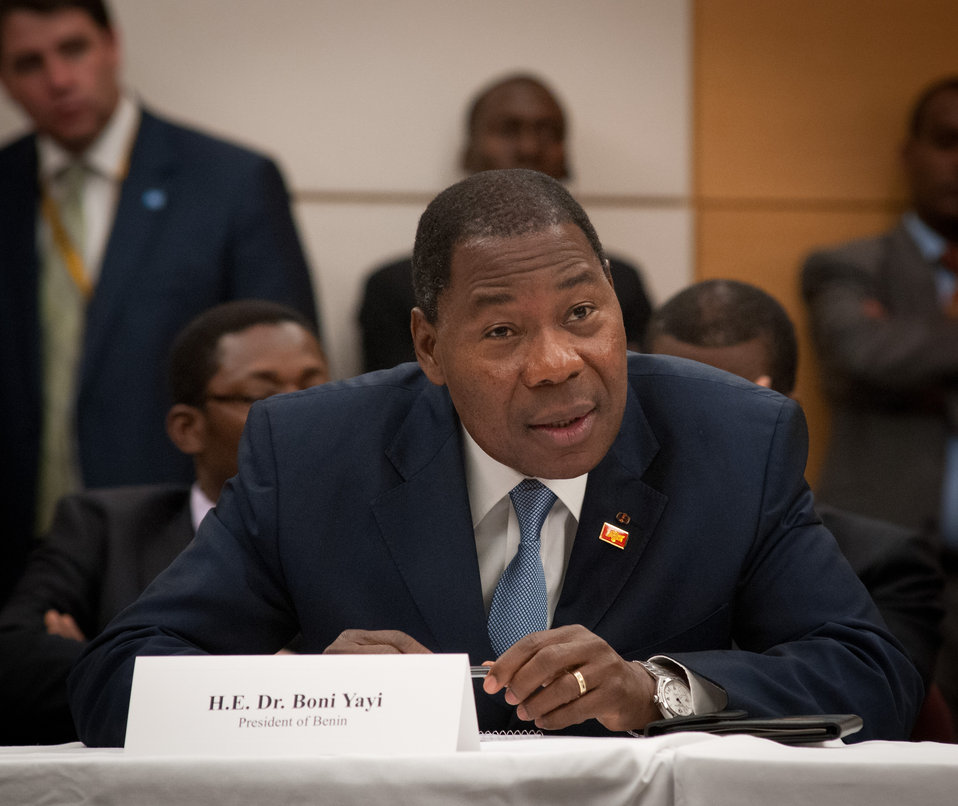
President of Benin His Excellency Dr. Boni Yayi makes remarks at the meeting of African Heads of State conference at the Ronald Reagan Federal Building in Washington, D.C., on Friday, May 18, 2012.